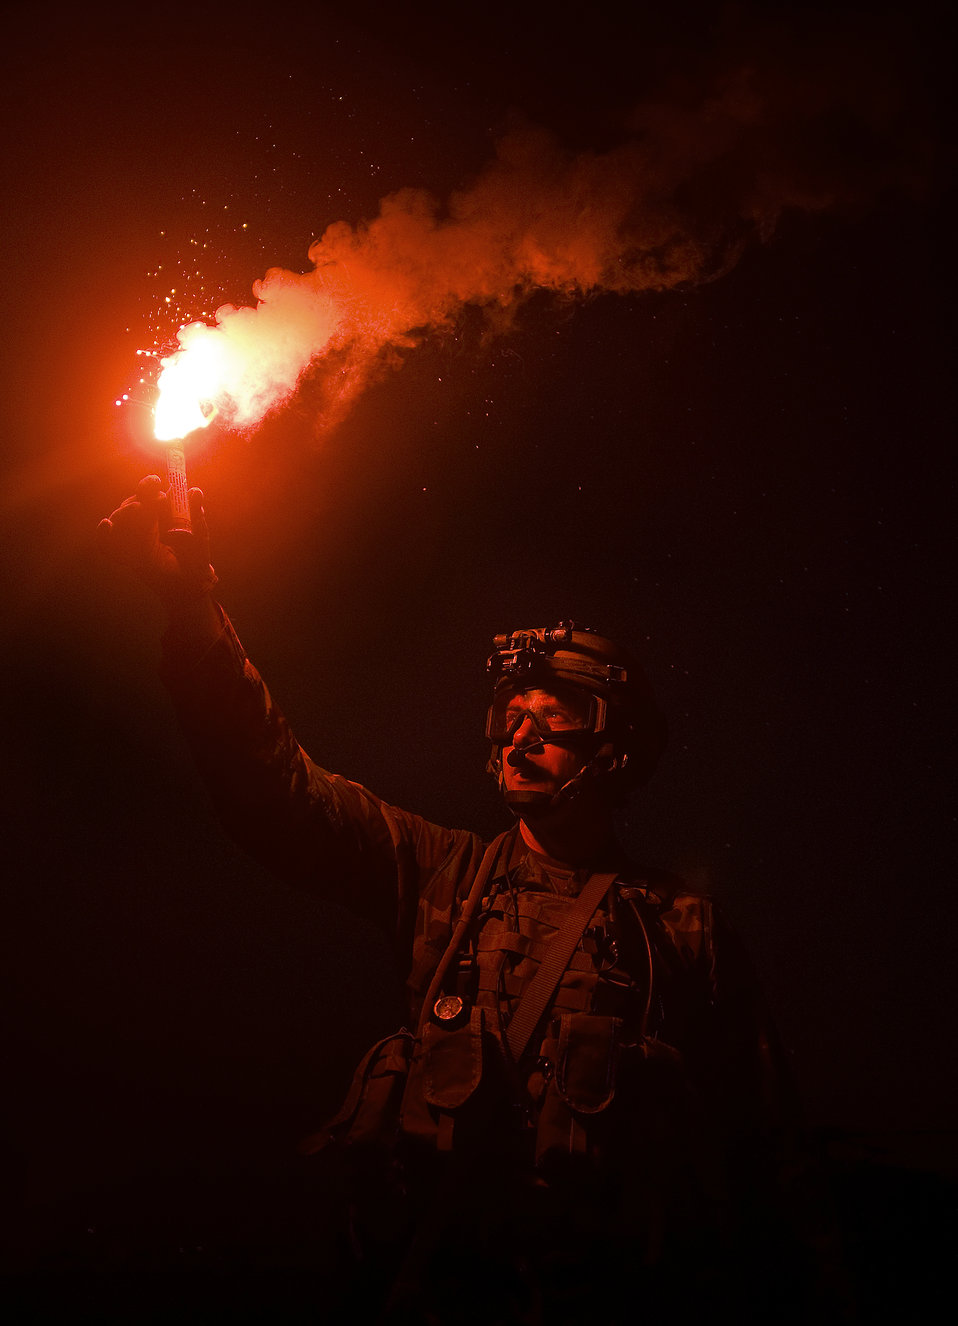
Follow the flare

Tech. Sgt. Wes Hufnagel signals during a rescue training mission March 9, 2009, at Patrick Air Force Base, Fla. He is a pararescueman assigned to the Air Force Reserve Command's 920th Rescue Wing.